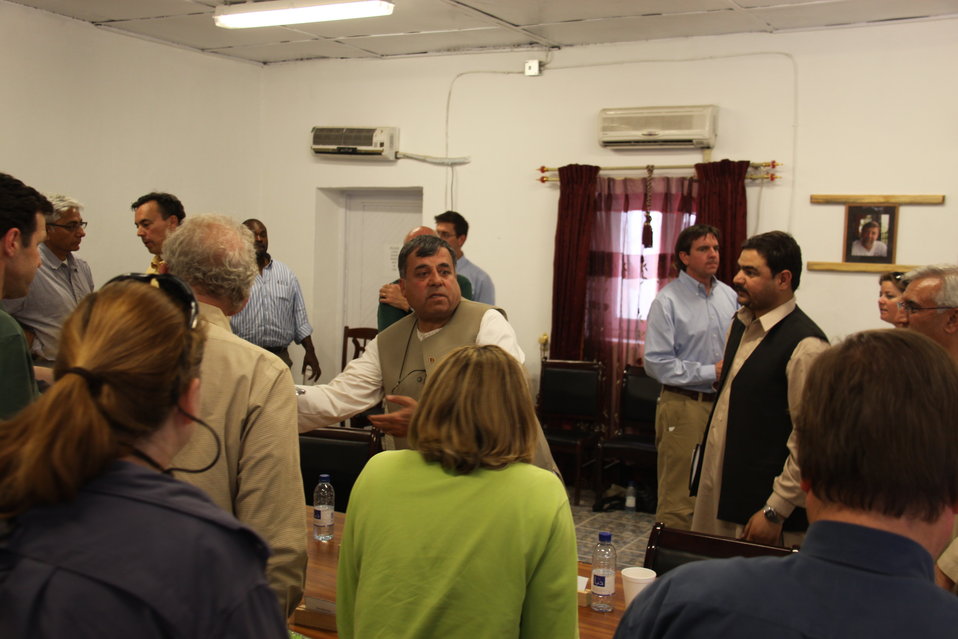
Meeting with Local Leaders in Kandahar